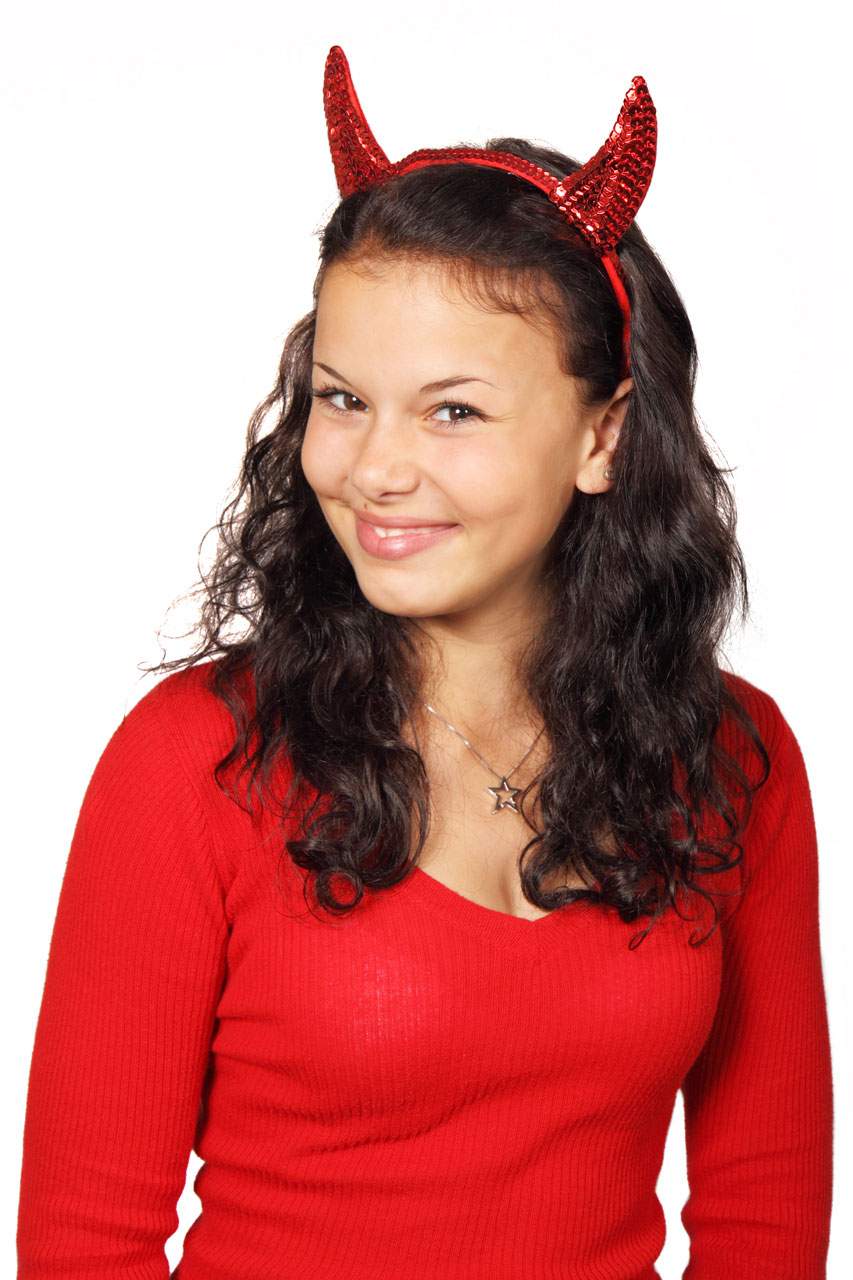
Hot devil

Cute little devil.